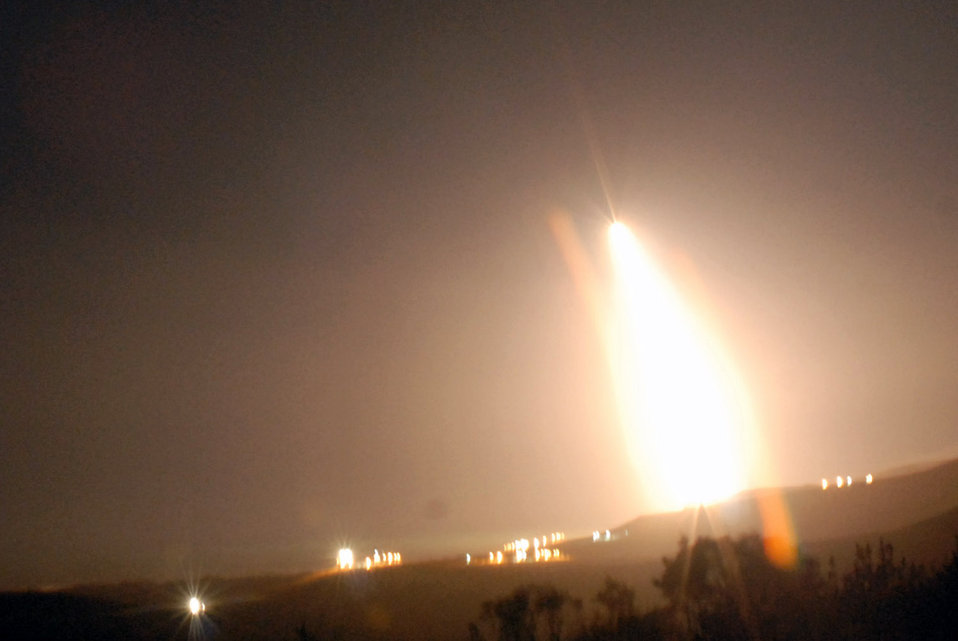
Vandenberg officials launch Minuteman III missile

A Minuteman III intercontinental ballistic missile launches at 1 a.m. Nov. 5 from Vandenberg Air Force Base, Calif. The missile was configured with a National Nuclear Security Administration test assembly in which a single unarmed re-entry vehicle traveled approximately 4,190 miles to their pre-determined targets near the Kwajalein Atoll in the Marshall Islands.